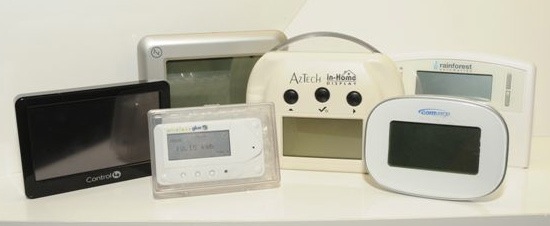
Various in-home energy monitors used in CenterPoint’s Smart Grid project